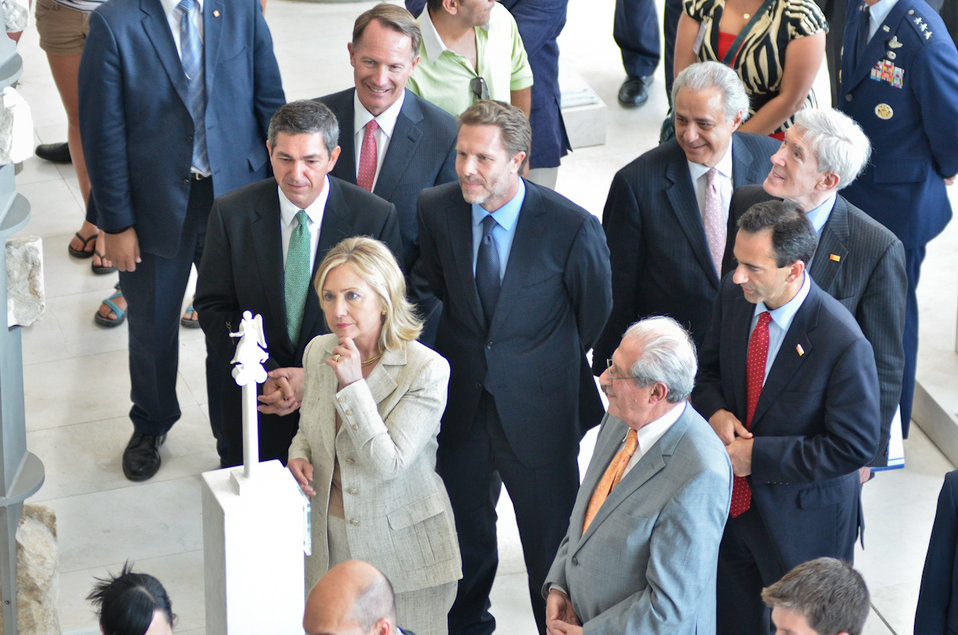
Secretary Clinton Looks at a Statue

U.S. Secretary of State Hillary Rodham Clinton looks at a statue alongside Dimitrios Pandermalis, right, President of the Museum Board of Directors, as she tours the Acropolis Museum in Athens, Greece, on July 17, 2011.